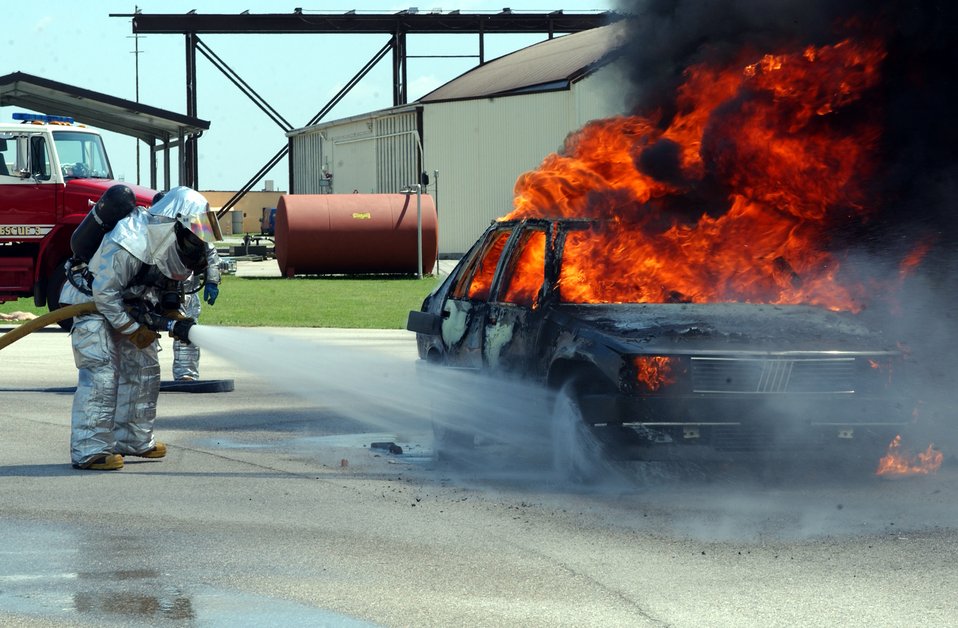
On fire

AVIANO AIR BASE, Italy -- A firefighter with the 31st Civil Engineer Squadron puts out a car fire during a Phase II exercise here July 19.